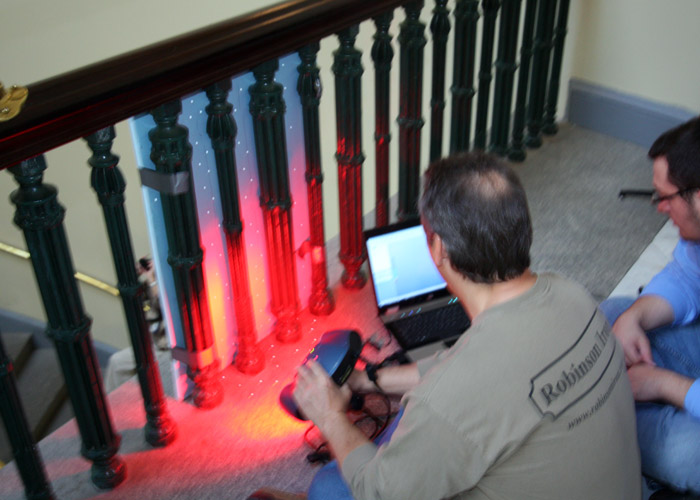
Historic Restoration of the Treasury Stairwells

A hand-held laser scanning devise records the ornamental balustrade pieces in three dimensional detail for to help create a model and then a mold for missing pieces of the balustrade.